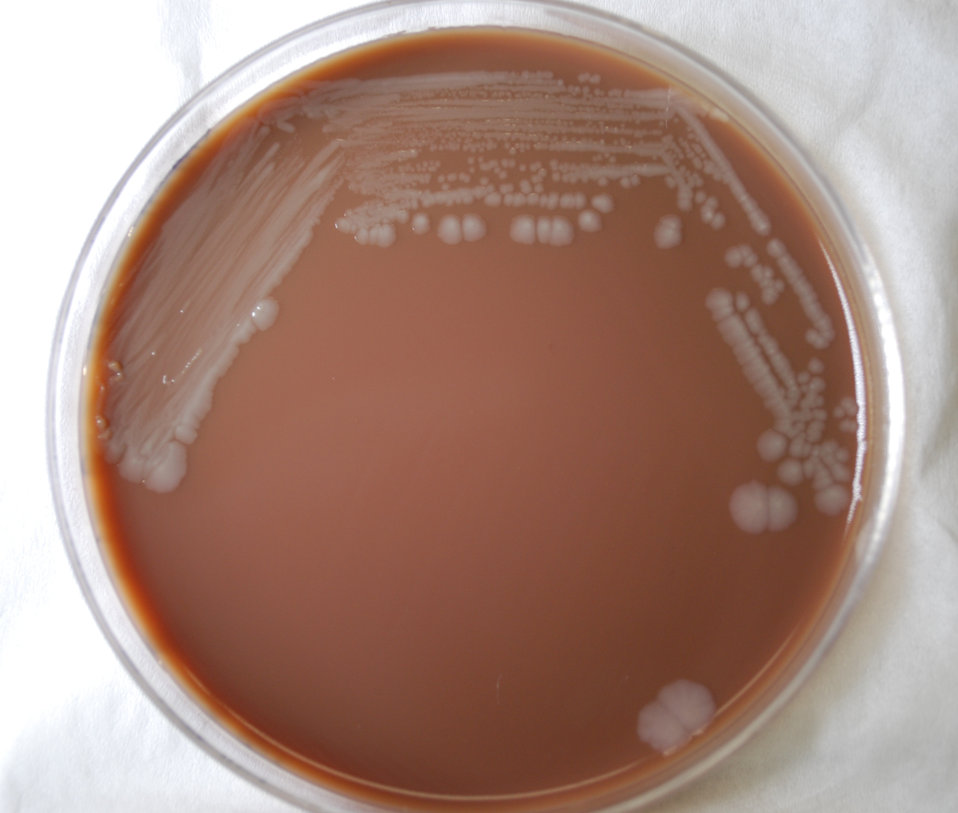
This photograph depicts the colonial morphology displayed by Gram-negative Burkholderia mallei bacteria, which was grown on a medium of chocolate agar, for a 72 hour time period, at a temperature of 37�C. B. mallei is the bacterium responsible for causing the infectious disease known as glanders. See PHIL 12272, 12273, and 12274 for closer views of these bacterial colonies.